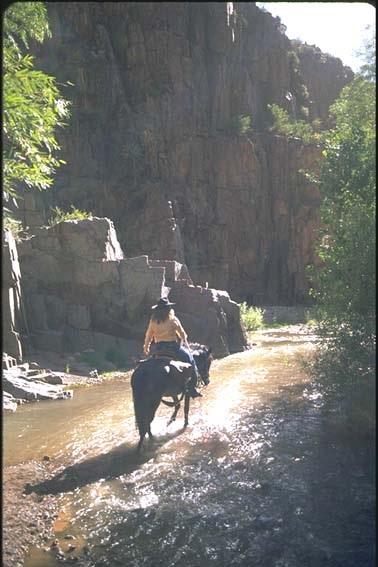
Aravaipa Canyon Wilderness